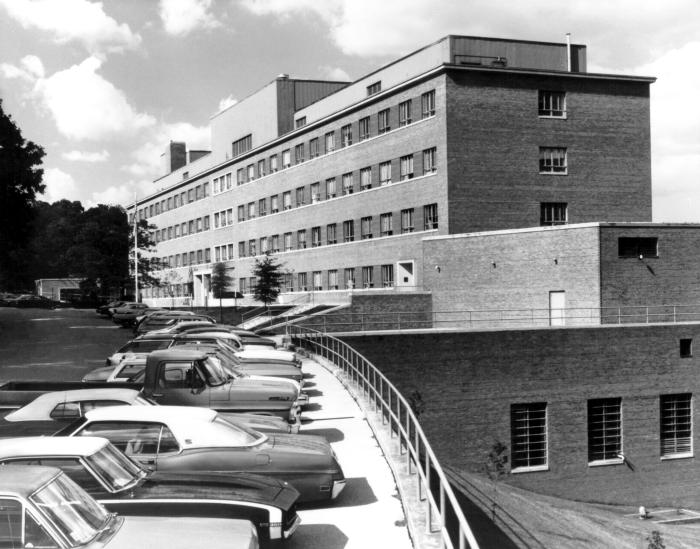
This is one of the National Institute for Occupational Safety and Health (NIOSH) Building.